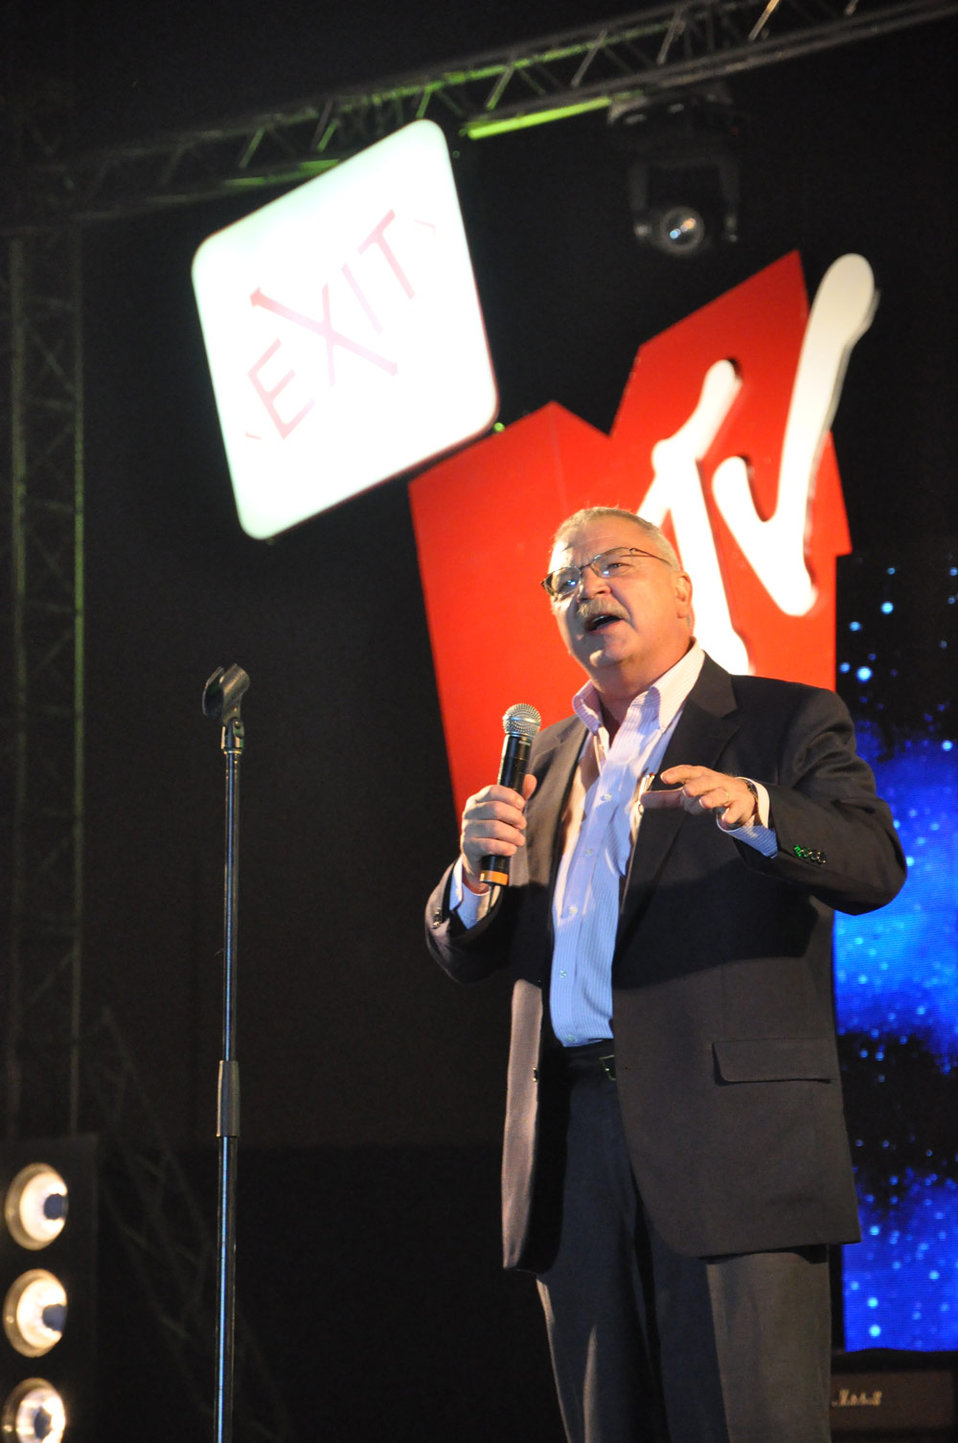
MTV EXIT Hanoi concert March 27, 2010

U.S. Ambassador Michael Michalak addresses 45,000 at the USAID-sponsored MTV EXIT concert in Hanoi.